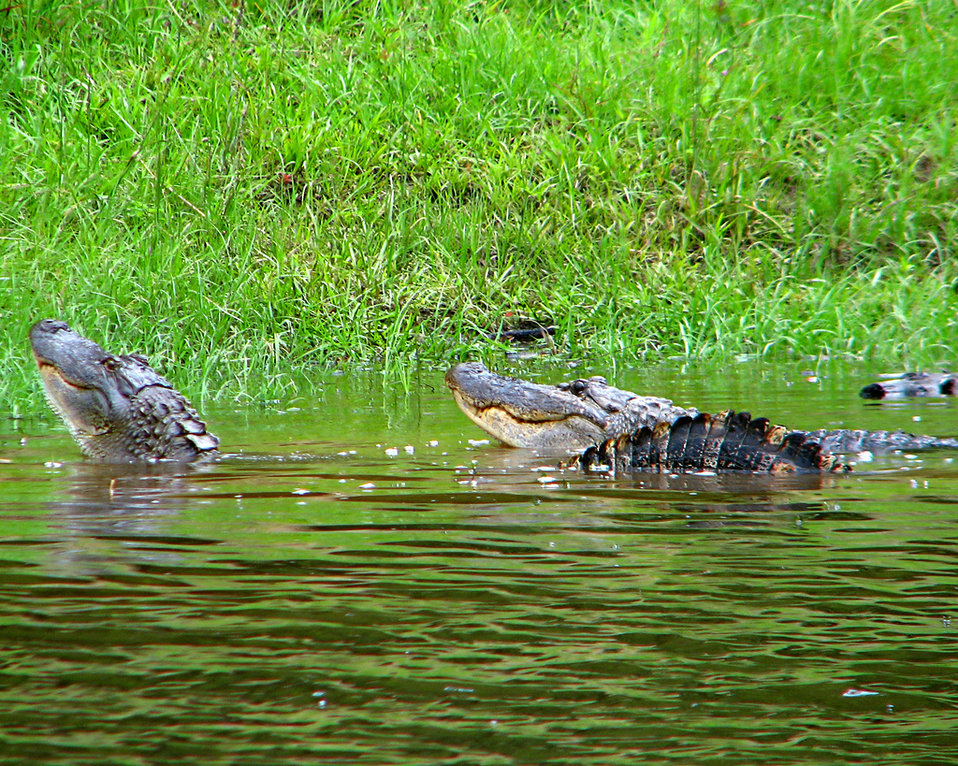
alligator pair

Noxubee National Wildlife Refuge, MS
May 18, 2008